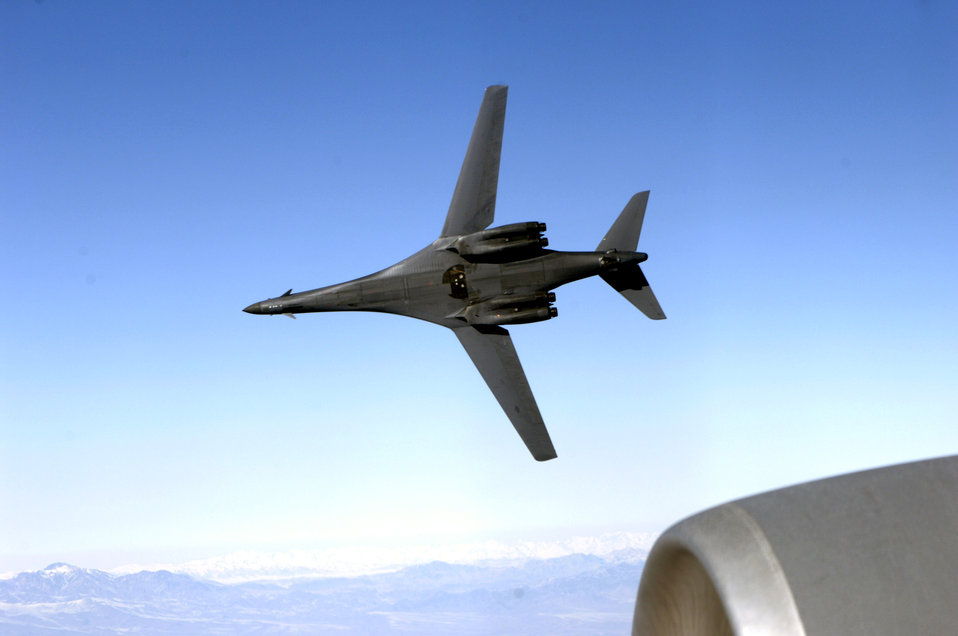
Air strikes hit more than 40 targets in Iraq

A B-1B Lancer from the 9th Expeditionary Bomb Squadron pulls away from a KC-135 Stratotanker from the 22nd Expeditionary Air Refueling Squadron at Manas Air Base, Kyrgyzstan, after receiving fuel over Afghanistan. Two B-1Bs hit reported al-Qaida safe havens Jan. 10 in Arab Jabour, Iraq.